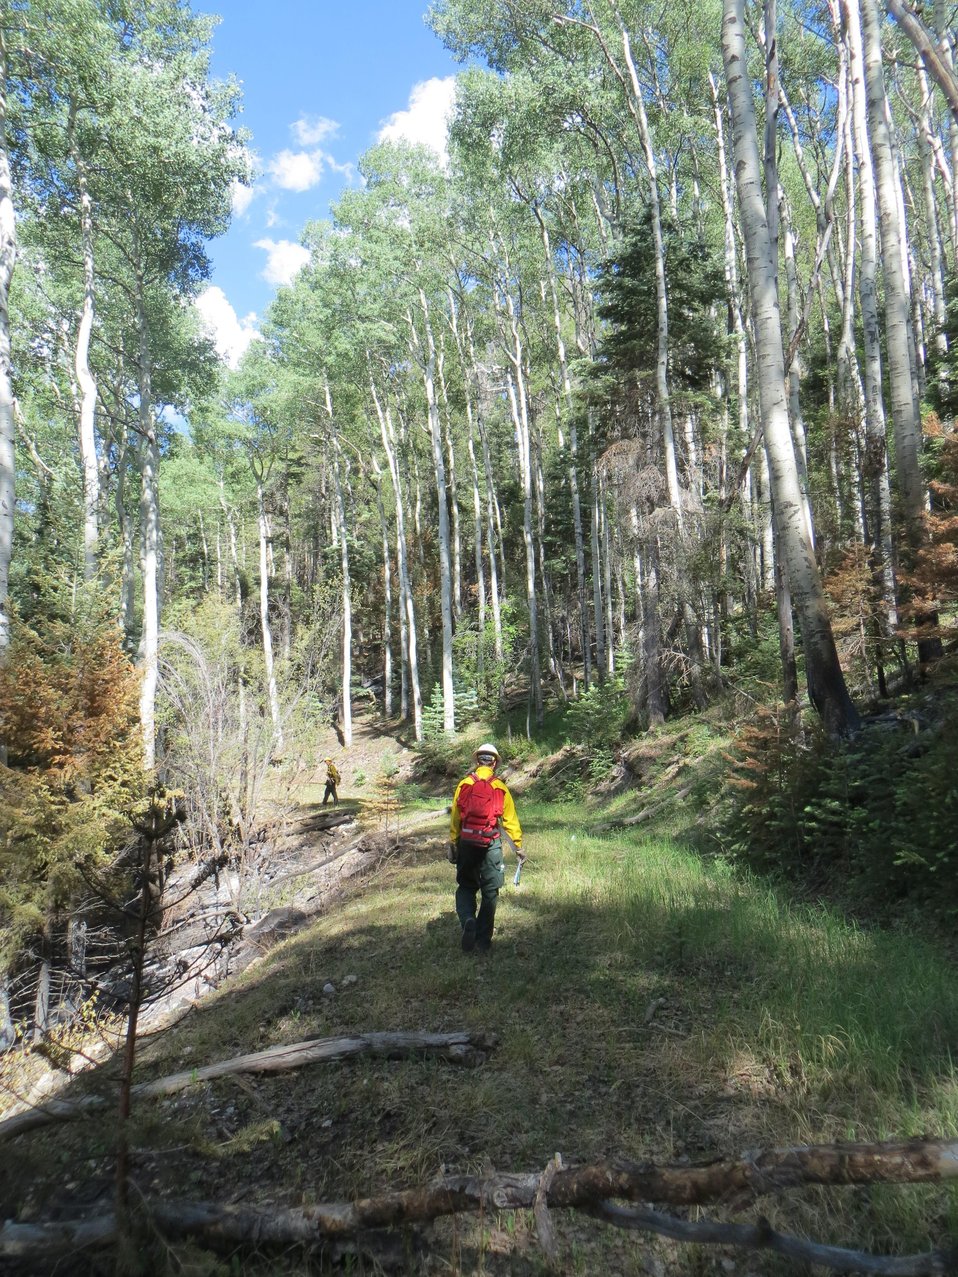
Burned Area Emergency Response (BAER) assessment teams examine the burned out areas at the Thompson Ridge Fire in the Sante Fe National Forest approximately 10 miles north of Jemez, NM. The fire began on May 31, 2013 by human ignition has consumed over 29, 903 acres. BAER teams are comprised of specialists that are highly experienced in conducting rapid watershed assessments and analyses and may include soil scientists, hydrologists, geologists, biologists, geographic information system specialists, archeologists, botanists, silviculturists, and civil engineers. (Silvaculturists are individuals that specialize in the care and cultivation of forest trees).